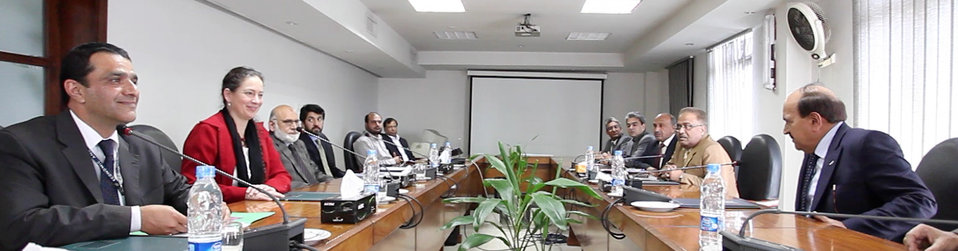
USAID delegation led by Melissa Knight meeting with the officials of Lahore Electric Supply Company (LESCO).

Lahore, February 29, 2012 - A team of USAID officials led by Ms. Melissa Knight, USAID Energy Office Director, visited Lahore Electric Supply Company (LESCO) to discuss the ongoing projects of USAID for LESCO and received briefing from the CEO LESCO, Sherafat Ali Sial about the performance of LESCO. The projects undertaken by USAID Power Distribution Program for LESCO were also discussed and results achieved so far were presented by LESCO. The USAID team along with LESCO officials then visited the Nargis feeder of Allama Iqbal Town where meter checking, fixing and replacement project has been carried out under USAID Power Distribution Program in collaboration with LESCO.